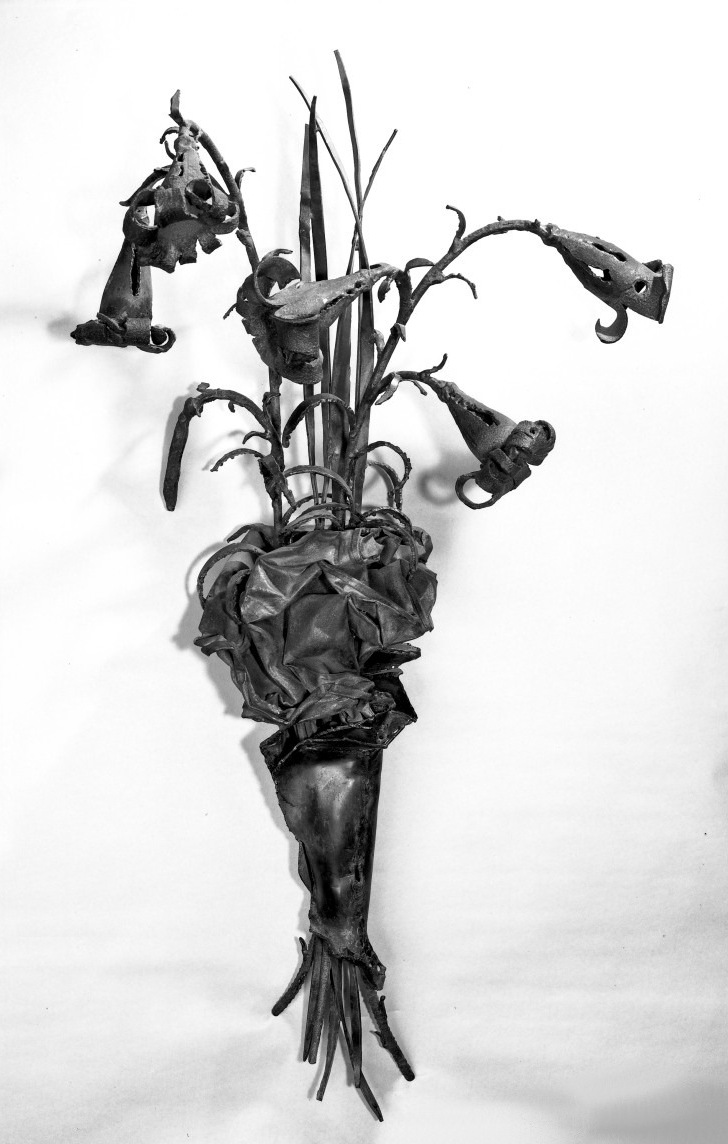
boutique metal